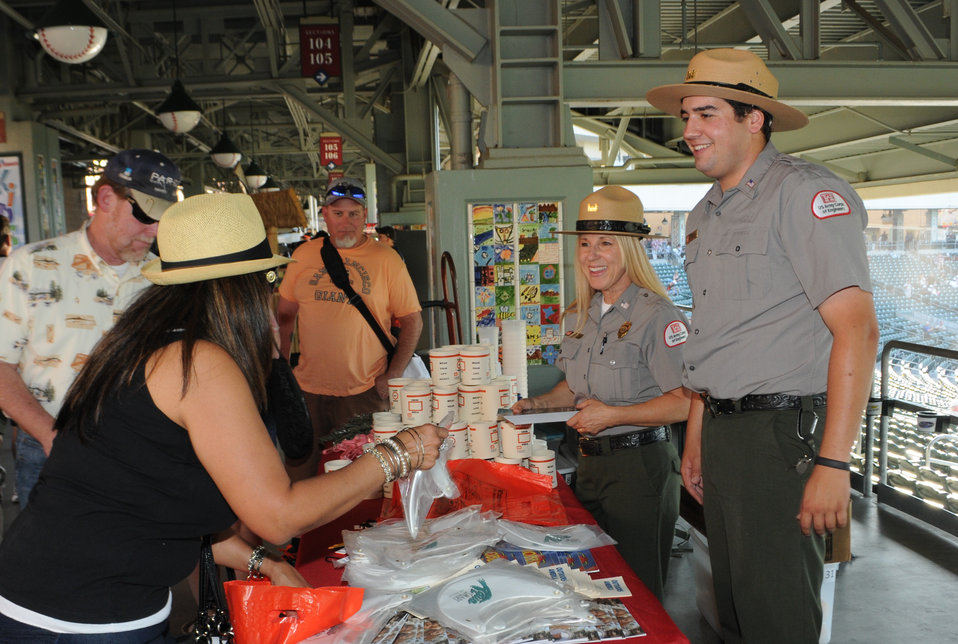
Sacramento District park rangers representing

Park rangers Heather Wright (center) and Tom Basile (right) from the U.S. Army Corps of Engineers Sacramento District handed out water safety giveaways during the Sacramento River Cats’ water safety night May 31, 2012, in West Sacramento, Calif.